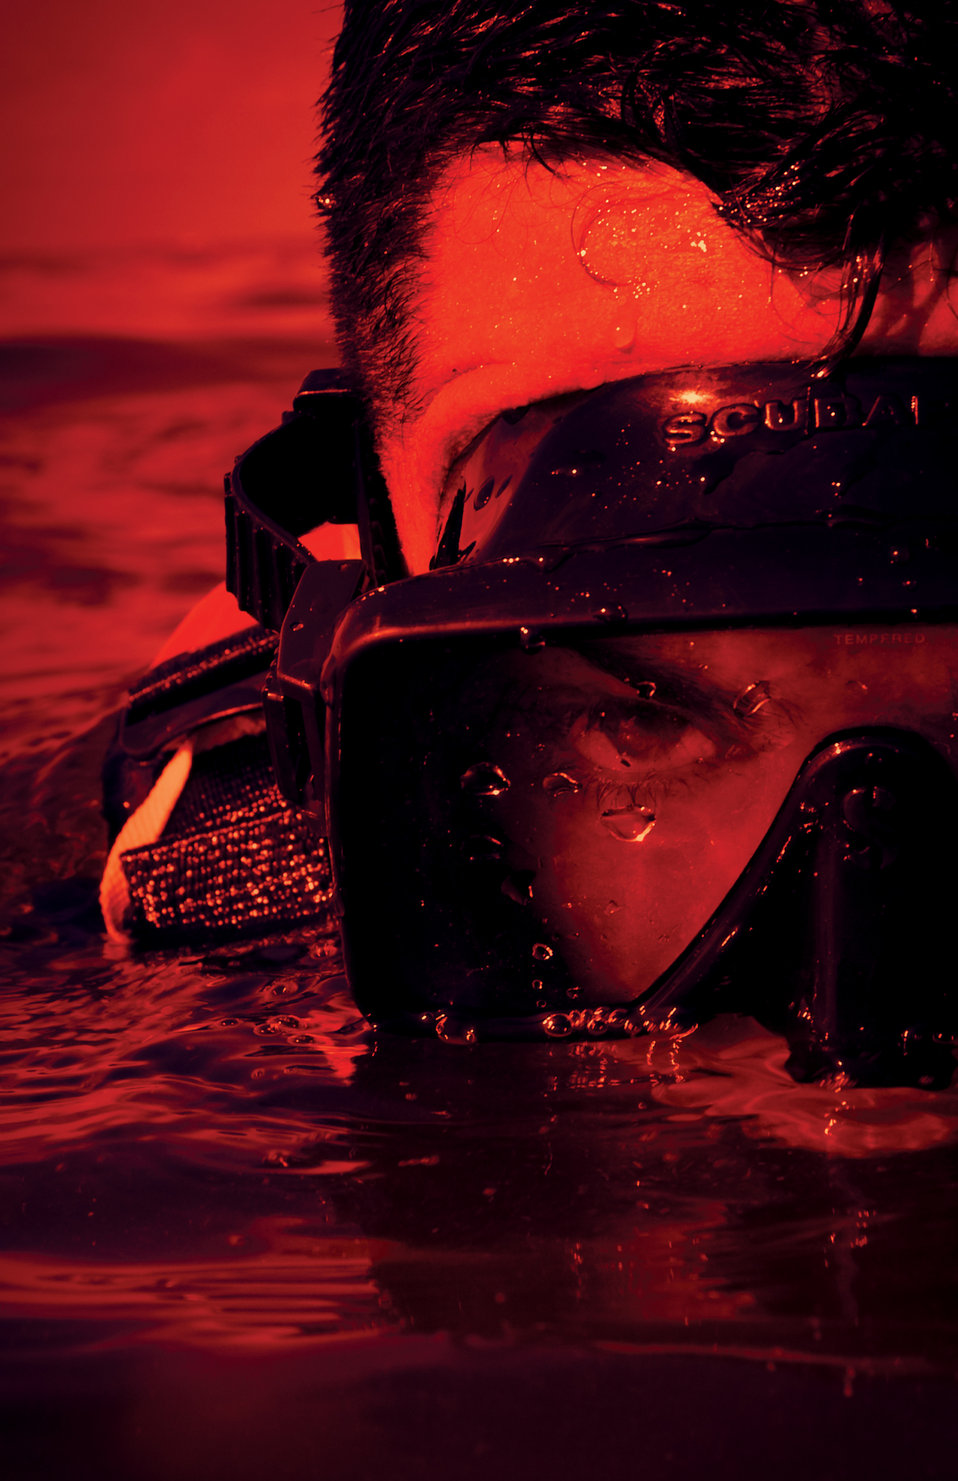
Be prepared

Pararescueman Senior Airman Dan Warren rises from the waters of the Banana River in Florida. He is a member of the 920th Rescue Wing, and he and his fellow pararescuemen must locate, rescue and provide medical treatment to astronauts in the event of an emergency during launch or landing.